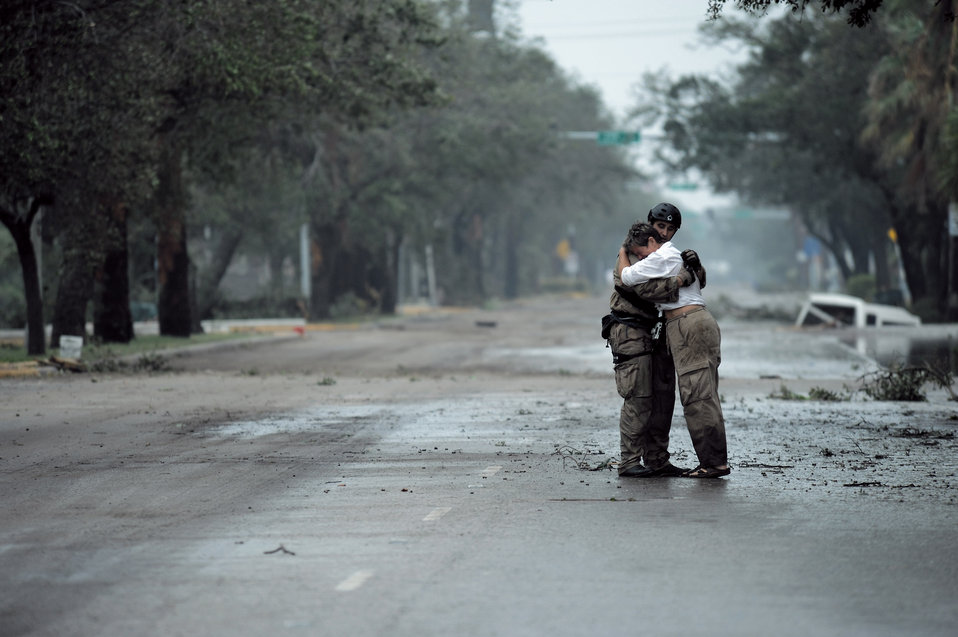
Airmen conduct search, rescue

Pararescueman Staff Sgt. Lopaka Mounts receives a hug from a resident during search and rescue operations after Hurricane Ike, Sept. 13. Sergeant Mounts assigned to the 331st Air Expeditionary Group at Randolph Air Force Base, Texas.